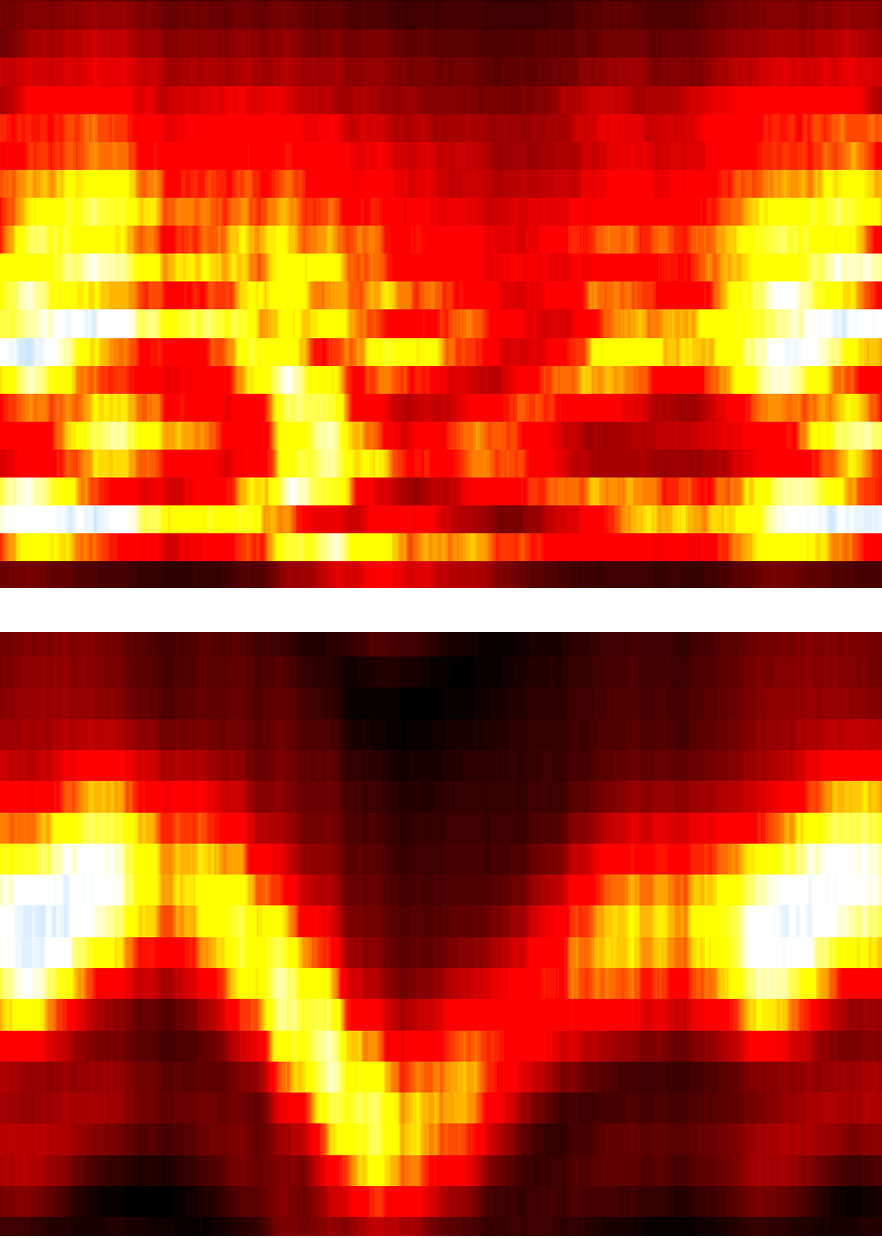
LIDAR

Conventional laser ranging systems would fail to produce usable data on the range to a target about 1 kilometer away (false color image, top). By contrast, the NIST system obtains a clear image of the relative changes in the range to the target with time. The rise and fall of the plot (bottom) represents very small changes in range from the detector to the surface of a rotating, wobbling disk.